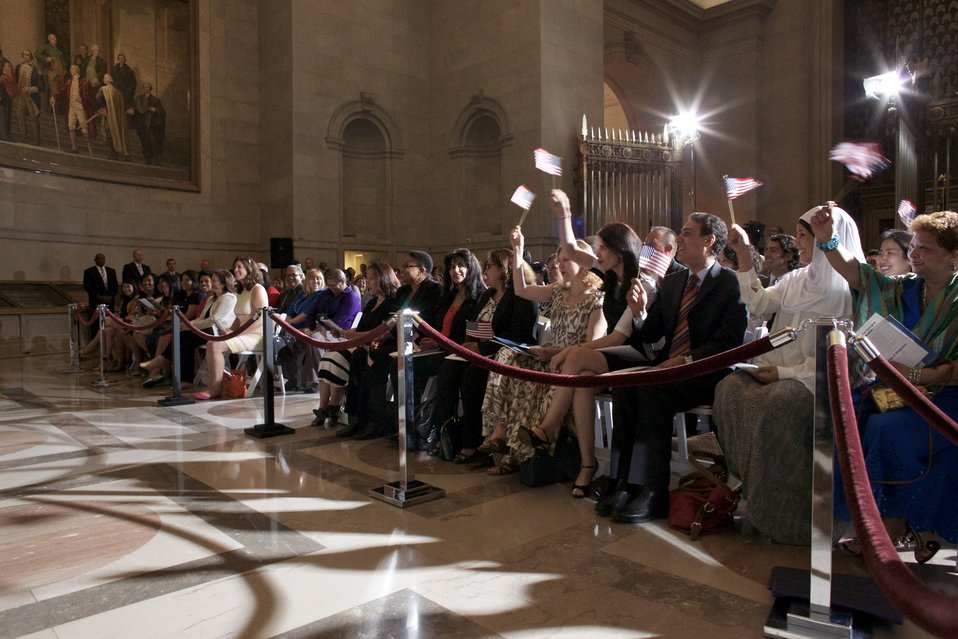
Naturalization Ceremony with Michelle Obama